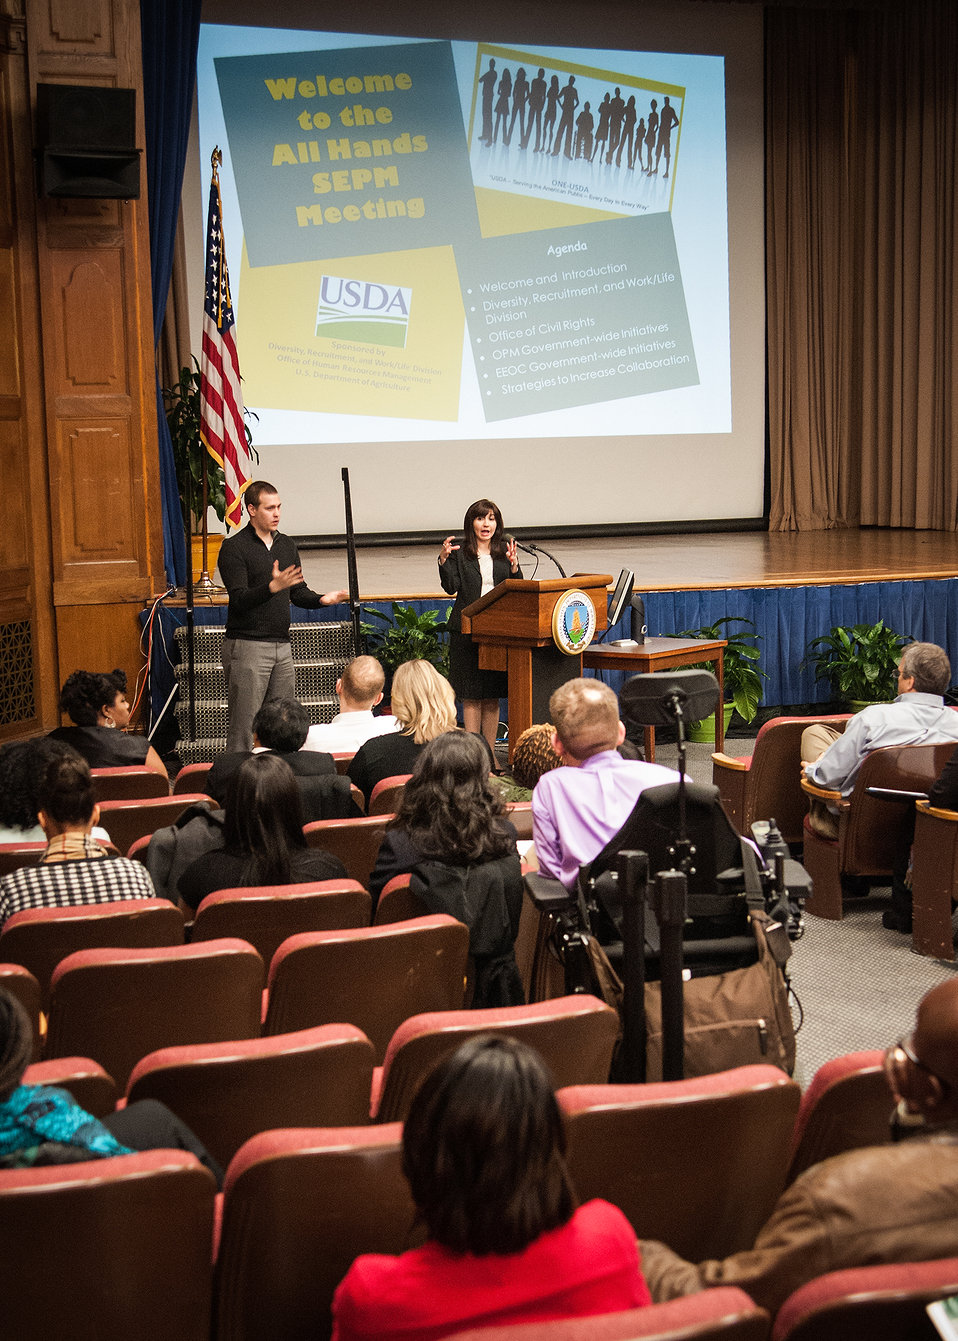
U.S. Office of Personnel Management (OPM) Office of Diversity and Inclusion Director Veronia Villalobos discusses OPM Government Wide Initiatives at the First Annual All Hands Special Emphasis Program Managers (SEPM) Meeting at the U.S. Department of Agriculture Jefferson Auditorium in Washington, D.C. on Wednesday, Mar. 13, 2013.